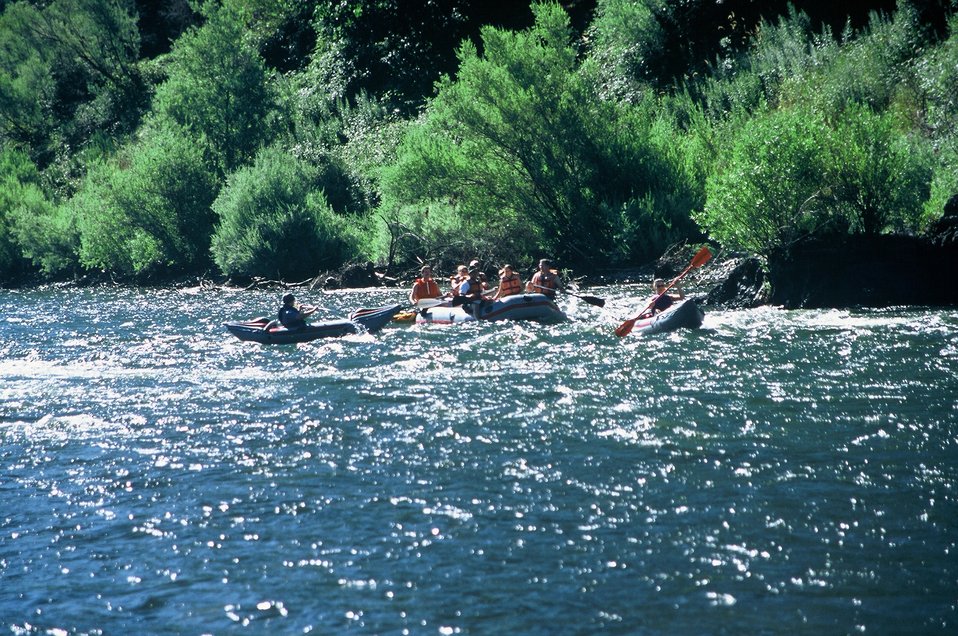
Blossom Rapids